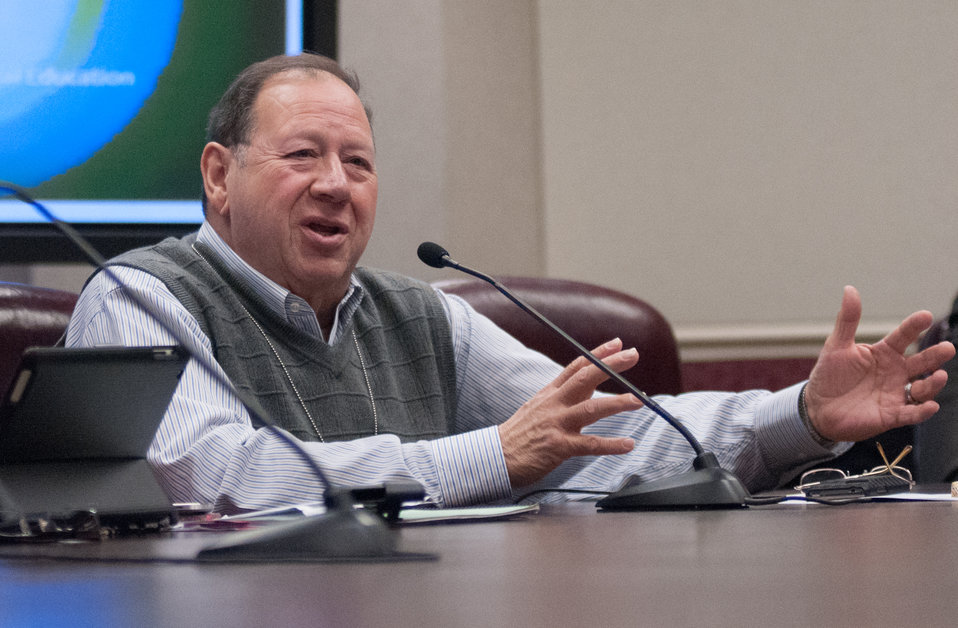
Bay Mills Community College President Michael Parish, Brimley, MI, presents some of his college's needs to U.S. Department of Agriculture Senior Advisor to the Secretary on Tribal Relations and Office of Tribal Relations Acting Director Max Finberg, during the USDA and American Indian Higher Education Consortium Leadership Group Winter Meeting, at the USDA Whitten Building, Williamsburg Room, in Washington D.C., on Friday, Feb. 8, 2013.